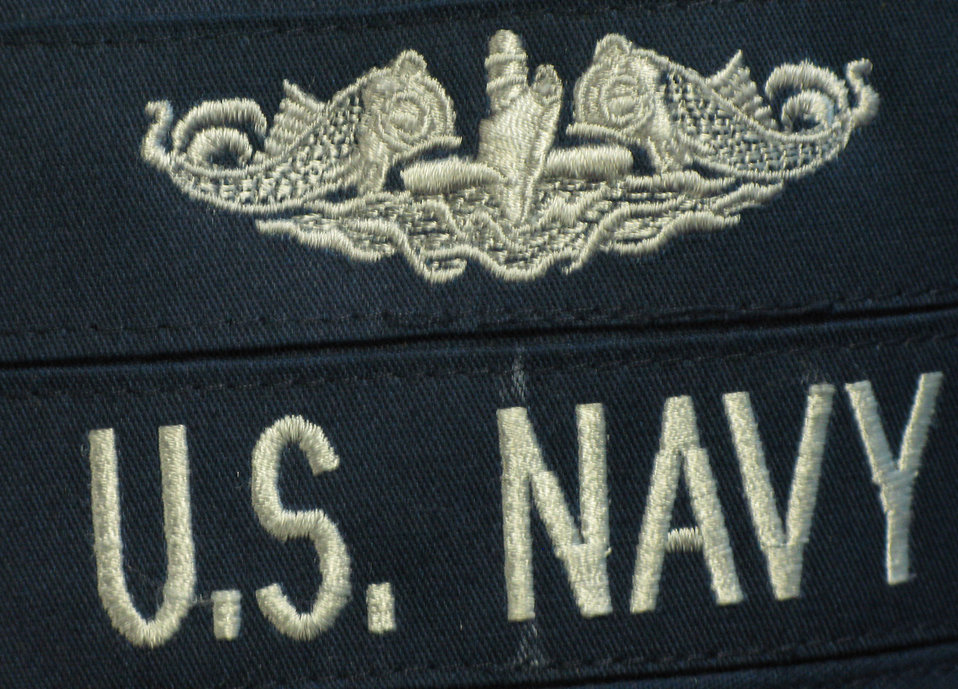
Trident submariners provide strategic deterrence

Enlisted crew members assigned duty aboard Trident strategic missile submarines are required to learn damage control procedures and other operational functions before pinning on the coveted silver